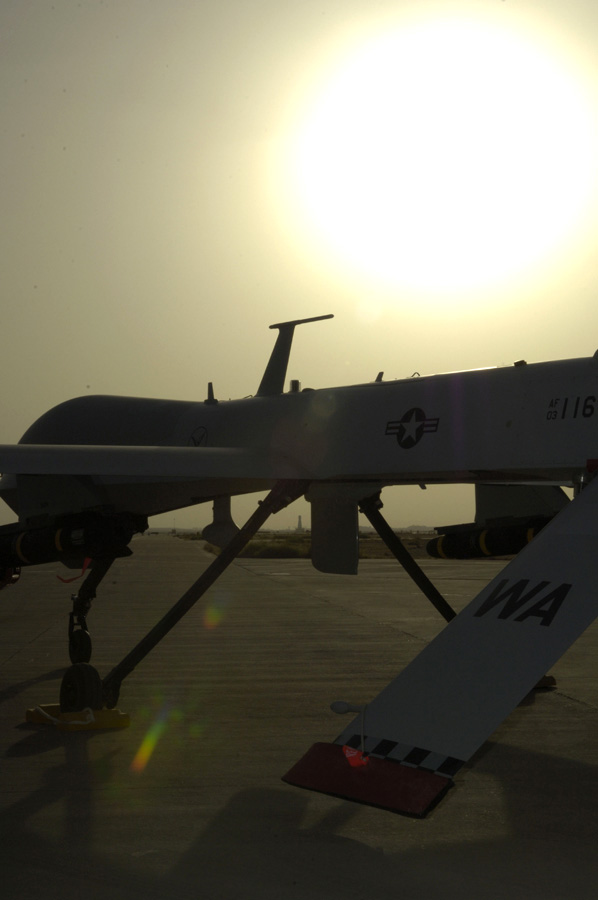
Small aircraft take on some of the biggest missions

An MQ-1 Predator unmanned aerial vehicle sits in the desert sun at Balad Air Base, Iraq, on Tuesday, June 6, 2006. Providing